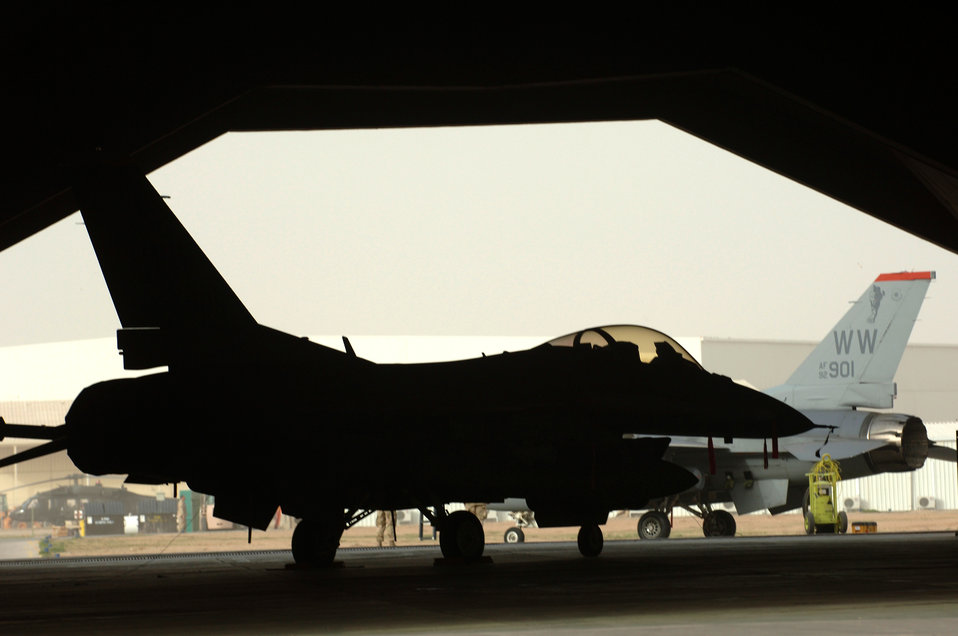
Buckle up

F-16 Fighting Falcons are prepared for takeoff Jan. 29 at Balad Air Base, Iraq. The 14th Fighter Squadron is deployed from Misawa Air Base, Japan, to the 332nd Air Expeditionary Wing at Balad AB.